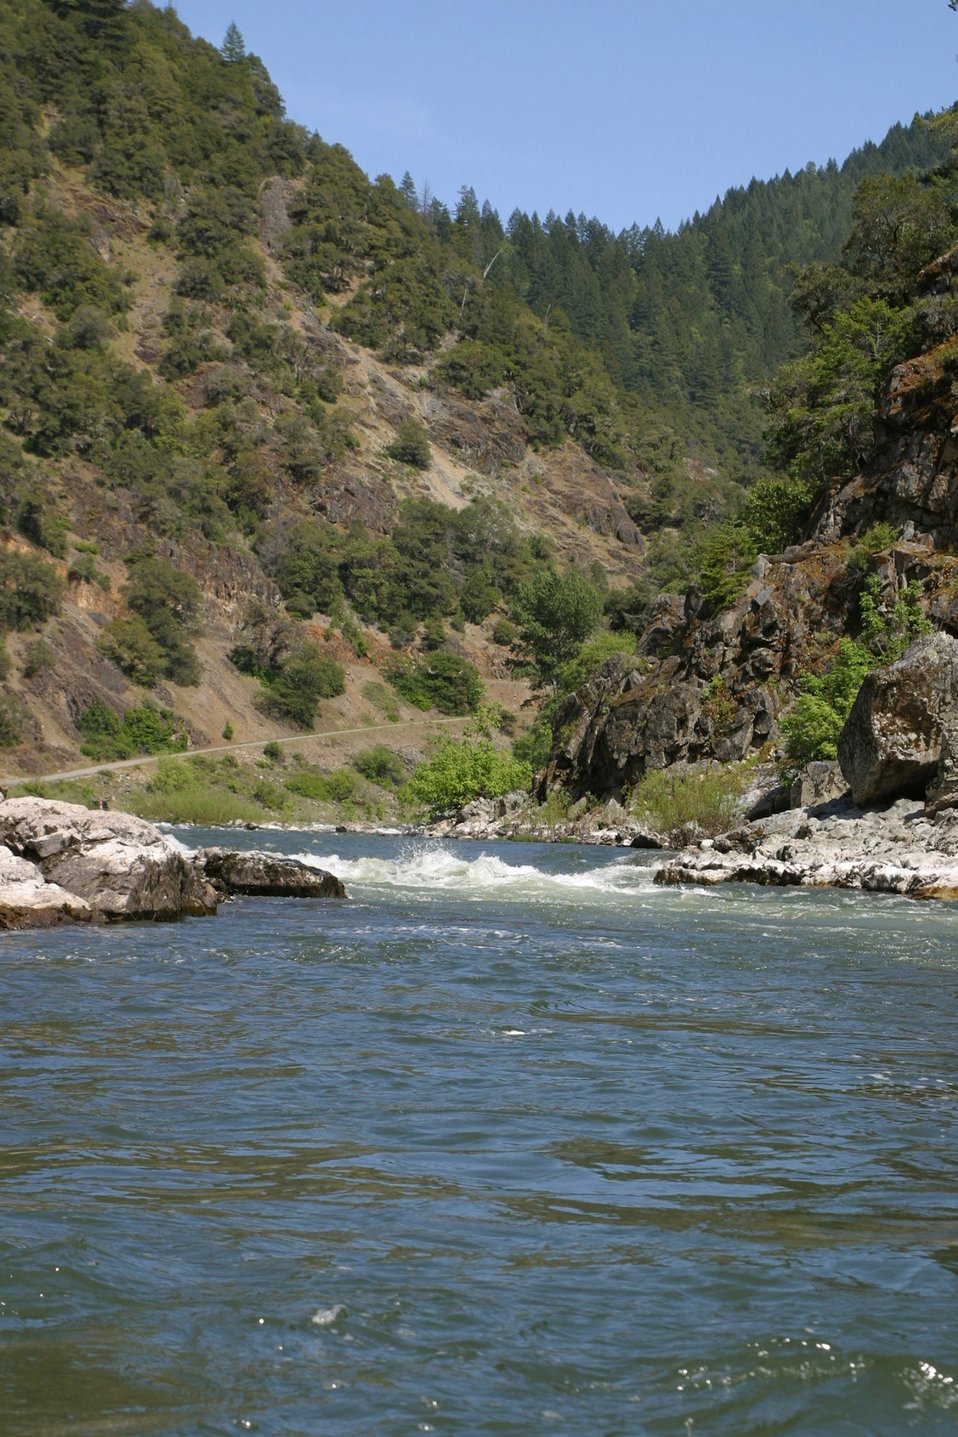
Wild section of the Rogue River from Grave Creek to Foster Bar. 3100 cfs at Grants Pass and 5300 at Agness.